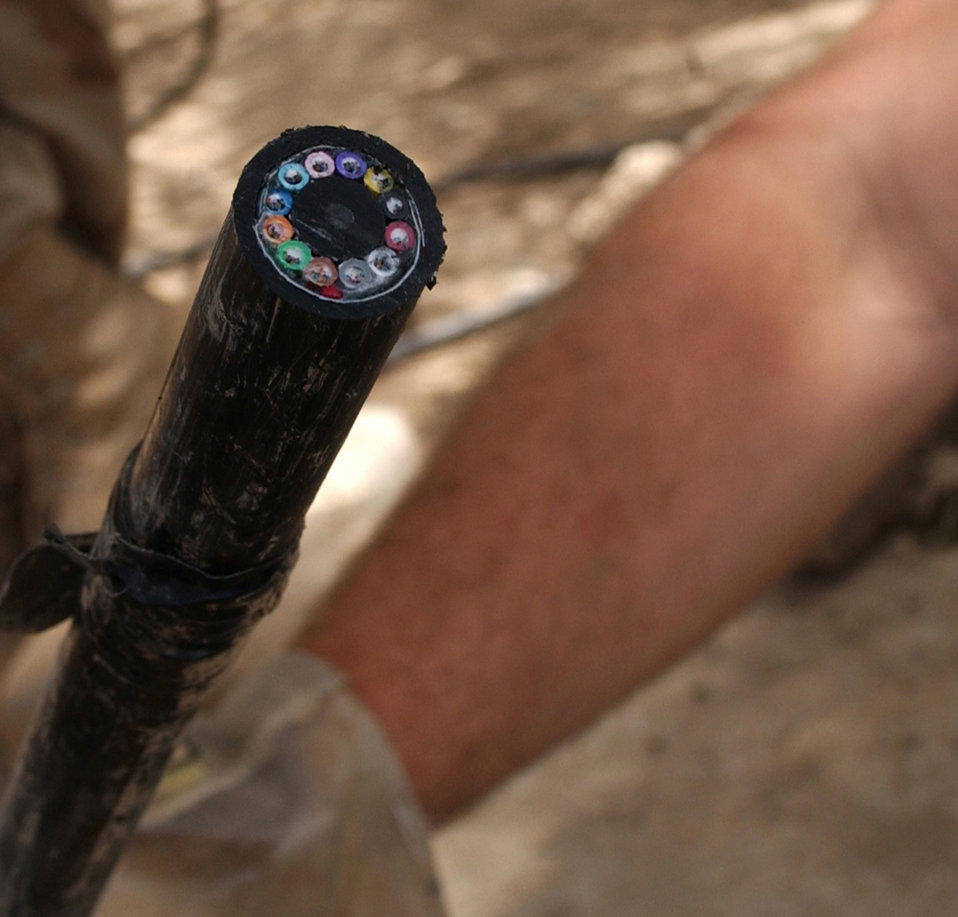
Airmen, Soldiers open lines of communication

BAGHDAD, Iraq -- More than 22 miles of 144-strand fiber optic cable will be installed here to provide state-of-the-art communication among coalition compounds. Each fiber optic strand is made of optically pure glass and is thinner than a human hair.